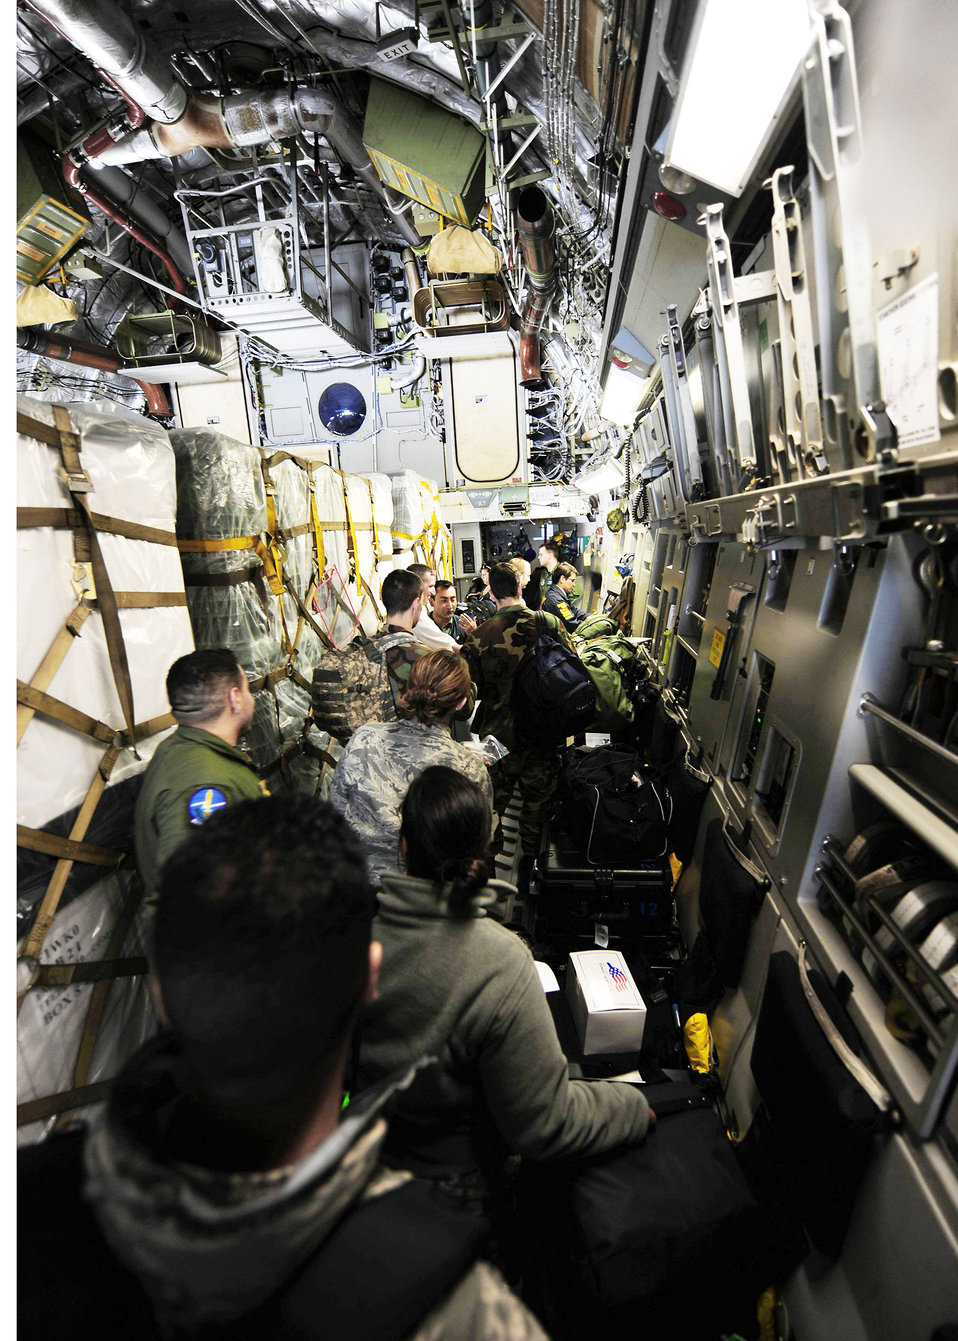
Airmen build hospital in Chile

Airmen load onto a C-17 Globemaster III awaiting departure March 8, 2010, from Lackland Air Force Base, Texas. The Airmen are part of an Air Force Expeditionary Medical Support team that deployed to Angol, Chile, to augment medical care for more than 110,000 Chileans in the region.